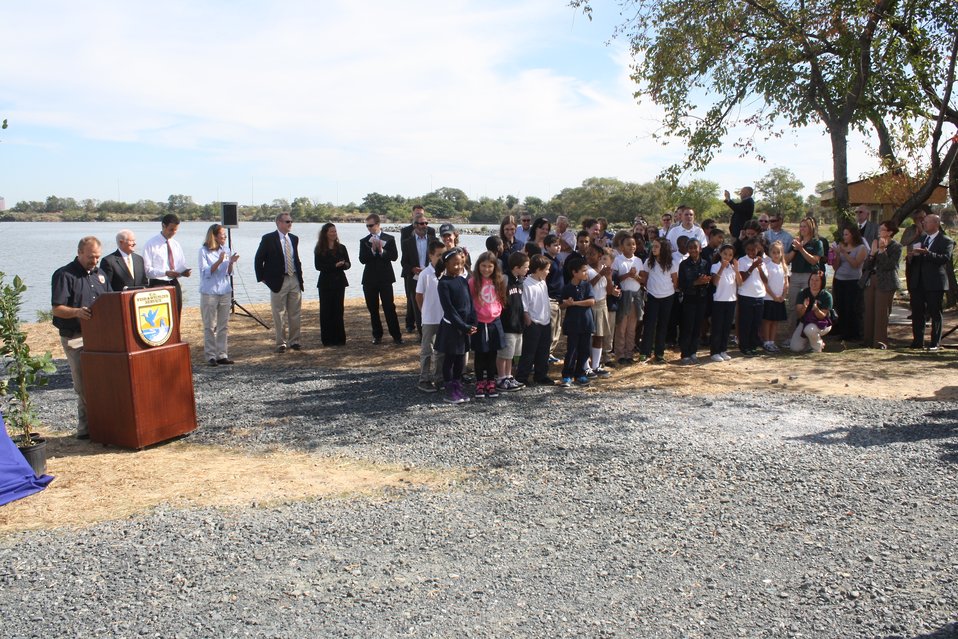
Designating Masonville Cove

On September 26, 2013, Masonville Cove at Baltimore Harbor was designated as the nations's first urban wildlife refuge partnership.